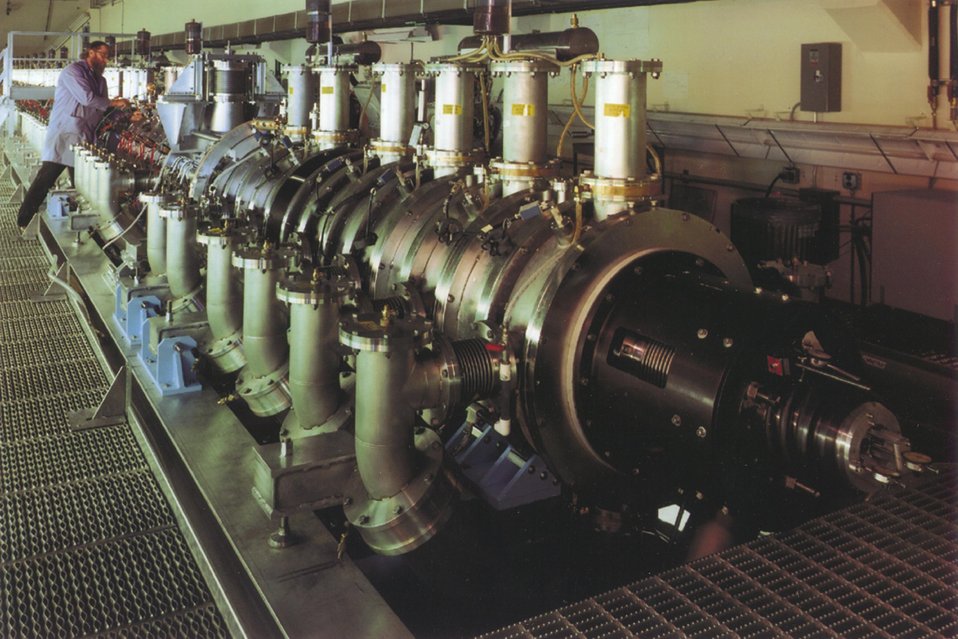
LLNL'S RADIOGRAPHIC FACILITY, THE FLASH X-RAY MACHINE.

LLNL'S UPGRADED FLASH X-RAY MACHINE WILL BE ONE OF THE MOST CAPABLE RADIOGRAPHIC FACILITIES IN THE WORLD. IN THE ABSENCE OF NUCLEAR TESTING, ADVANCED RADIOGRAPHY IS THE MOST IMPORTANT EXPERIMENTAL TOOL CURRENTLY AVAILABLE TO HELP MAINTAIN THE NATION'S AGING NUCLEAR STOCKPILE.